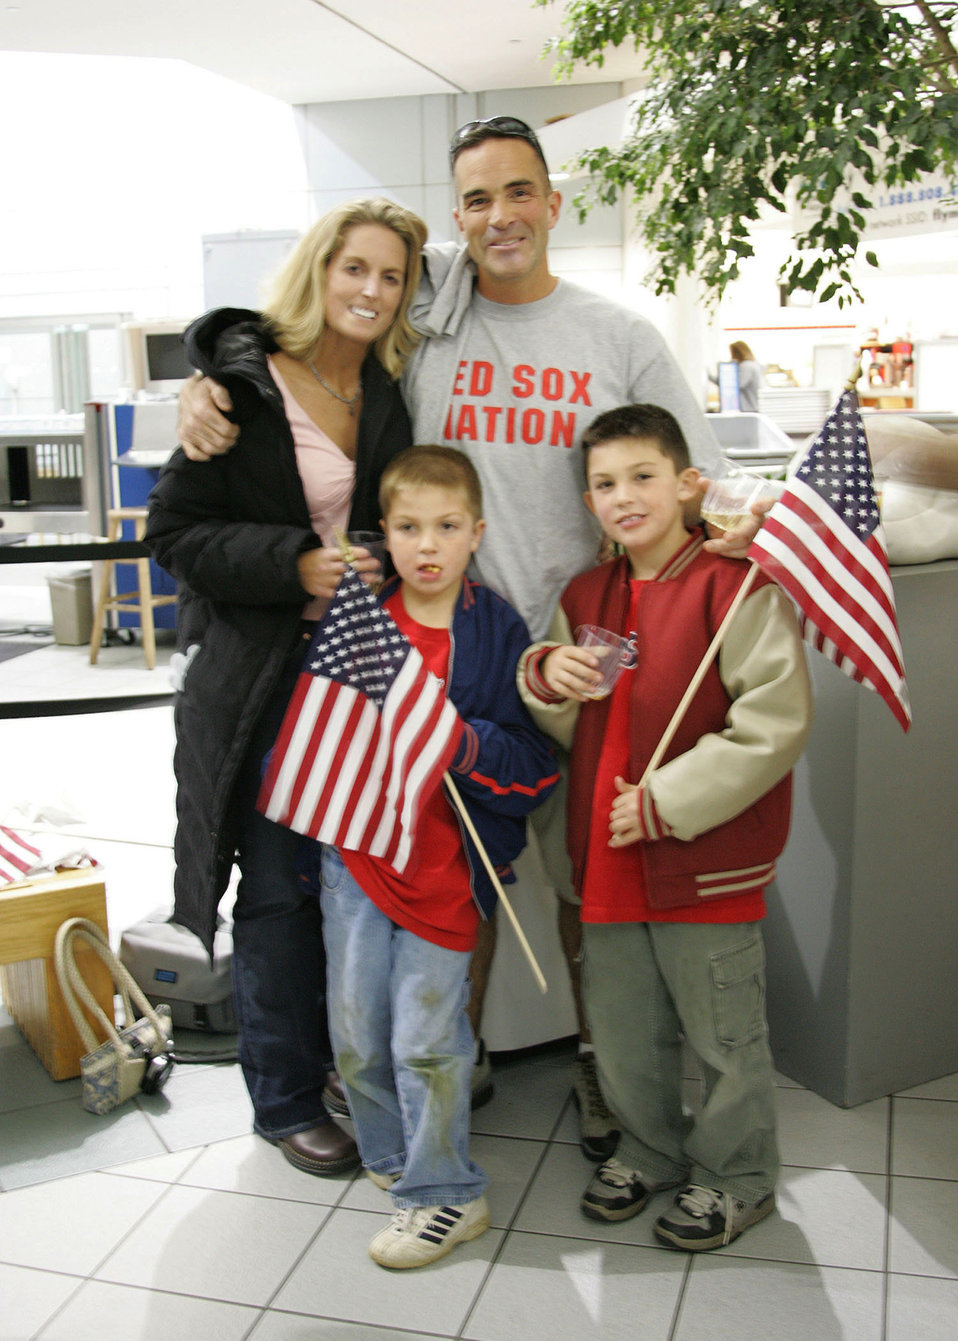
Survivor shares story to combat troop suicides

Marine Corps Maj. John Ruocco poses for a picture with his wife, Kim, and children, Joey, right, and Billy, in November 2004. The major committed suicide in 2005 after a long battle with depression. His wife has devoted herself to suicide prevention and assisting survivors.